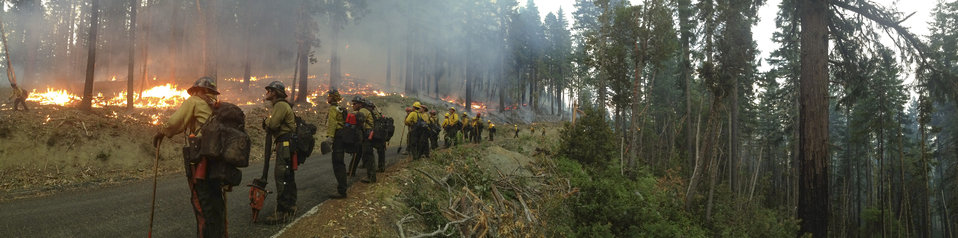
Panorama of the Geronimo Interagency Hotshot Crew (IHC) keeps watch on their burnout along a forest road. This will help stop the main fire when it comes to this location in the Big Windy Complex, approximately 15 miles west of Interstate 5 and northeast of Galice, OR, on Friday, Aug 9, 2013 in Oregon. The Geronimo Hotshots are from the San Carlos Apache Tribal Natural Resources Program, in San Carlos AZ. Hotshots are highly trained wildlands firefighters that normally work in remote locations under arduous conditions.